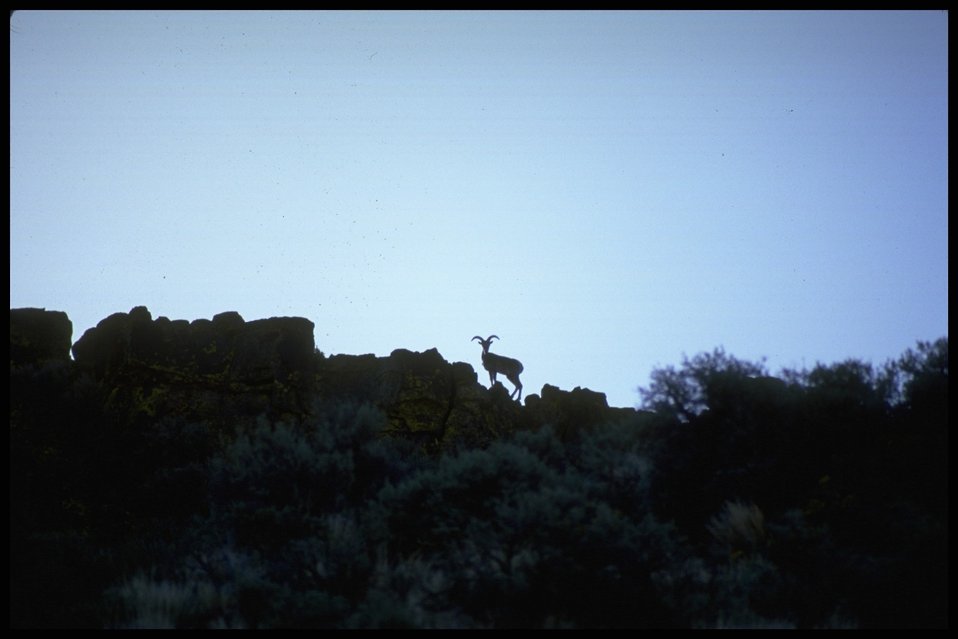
Farshot of Big Horned Sheep, Lakeview District.